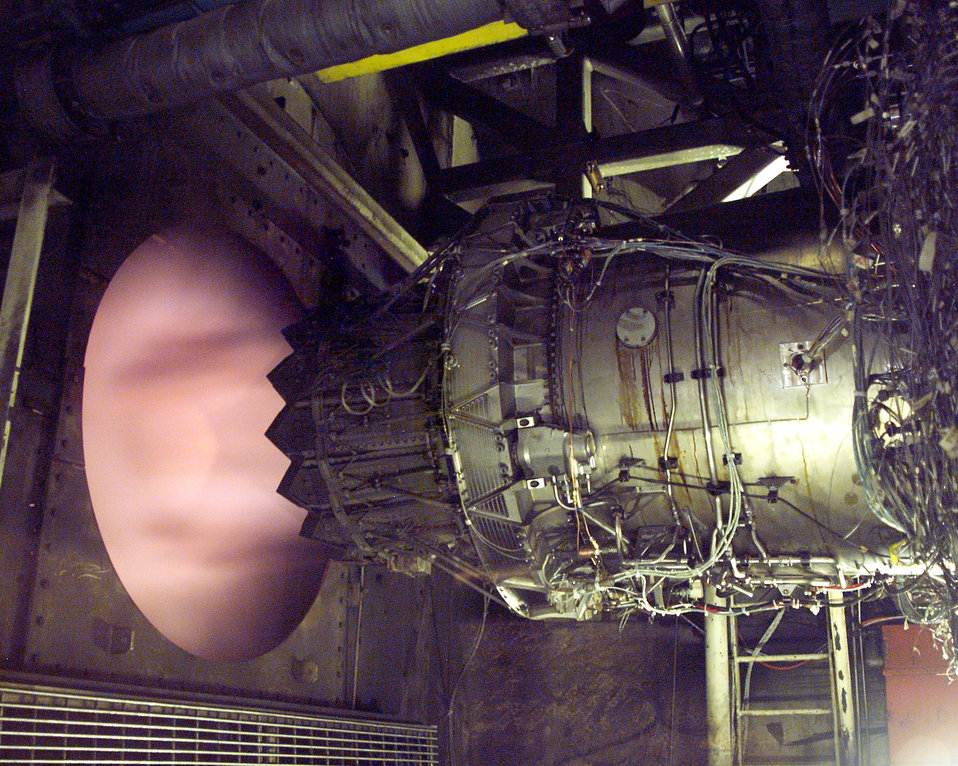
F-35 Lightling II Joint Strike Fighter initial flight

A Pratt and Whitney F135 engine undergoes altitude testing at the Arnold Engineering Development Center. It is one of two engines slated to power the F-35 Lightning II Joint Strike Fighter.